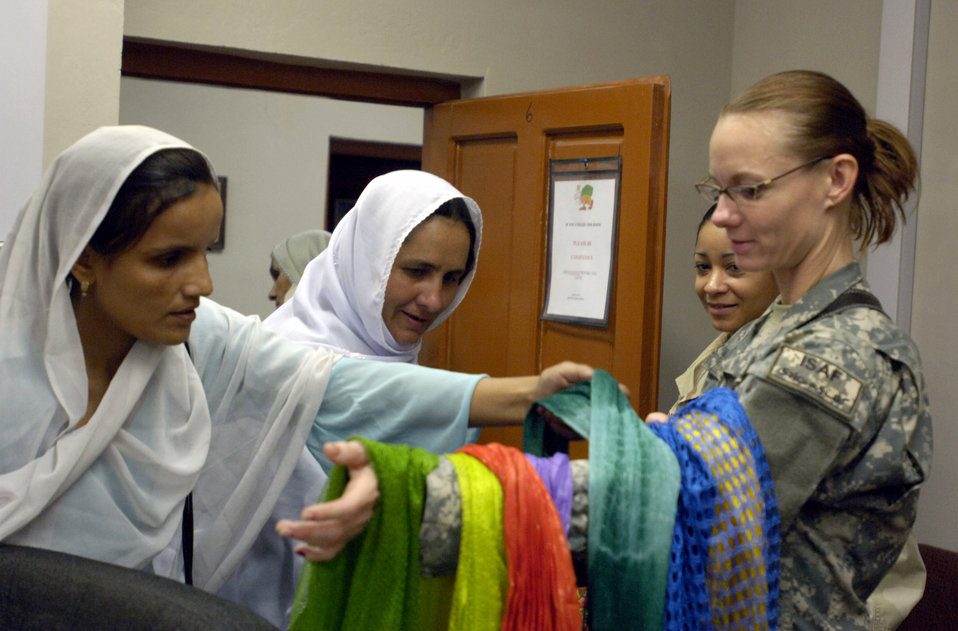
American, Afghan women join together for tea, discussion

Capt. Heather Kekic offers shawls as gifts to Afghan women who attended a tea Sept. 5 at Forward Operating Base Mehtar Lam, Afghanistan. Female Airmen and Soldiers assigned to the Laghman Provincial Reconstruction Team hosted the tea for influential Afghan women living throughout Afghanistan's Laghman province. Captain Kekic, who is the PRT's public affairs and information officer, is deployed from Randolph Air Force Base, Texas.